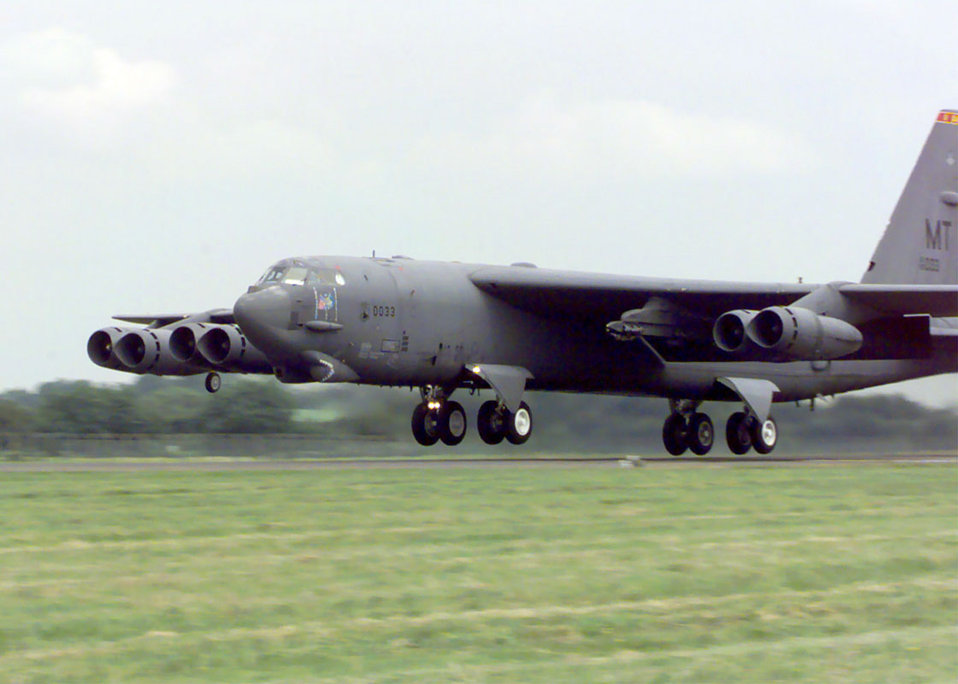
Homeward bound

ROYAL AIR FORCE FAIRFORD, England --A B-52 Stratofortress, from the 5th Bomb Wing, Minot Air Force Base, N.D., takes-off homeward bound, June 23, 1999, afer supporting NATO Operation Allied Force.